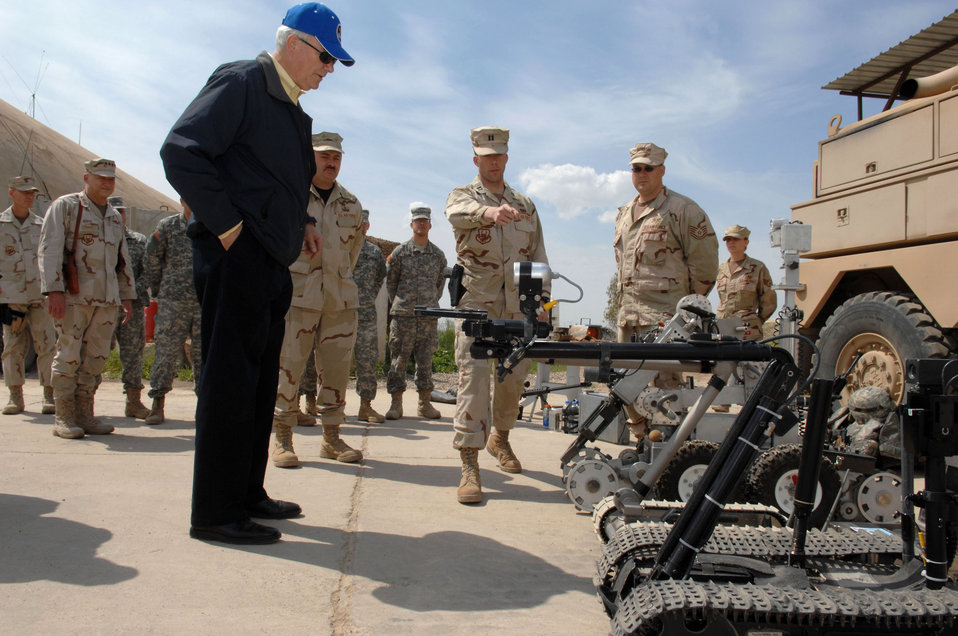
SECAF visits Airmen at Kirkuk

Capt. Joshua Tyler, the explosive ordnance disposal flight commander, explains to the Secretary of the Air Force, Michael W. Wynne, March 28, how explosives are retrieved once discovered at Kirkuk Air Base in Iraq.